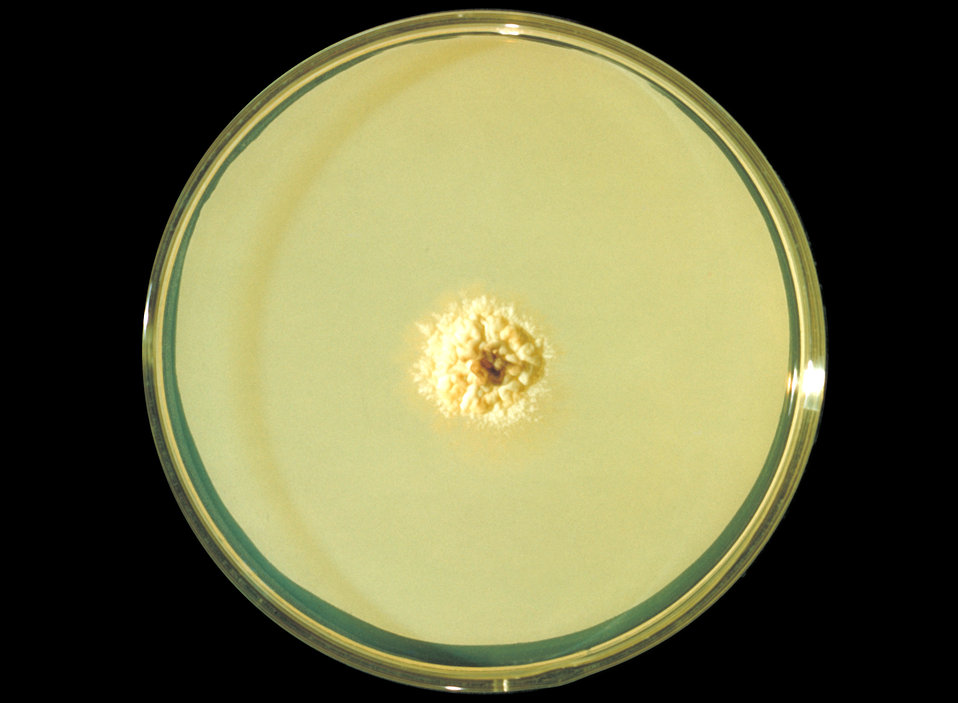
This was a Sabouraud's dextrose agar plate culture of the anthrophilic dermatophyteTrichophyton yaoundei at wk. 6.